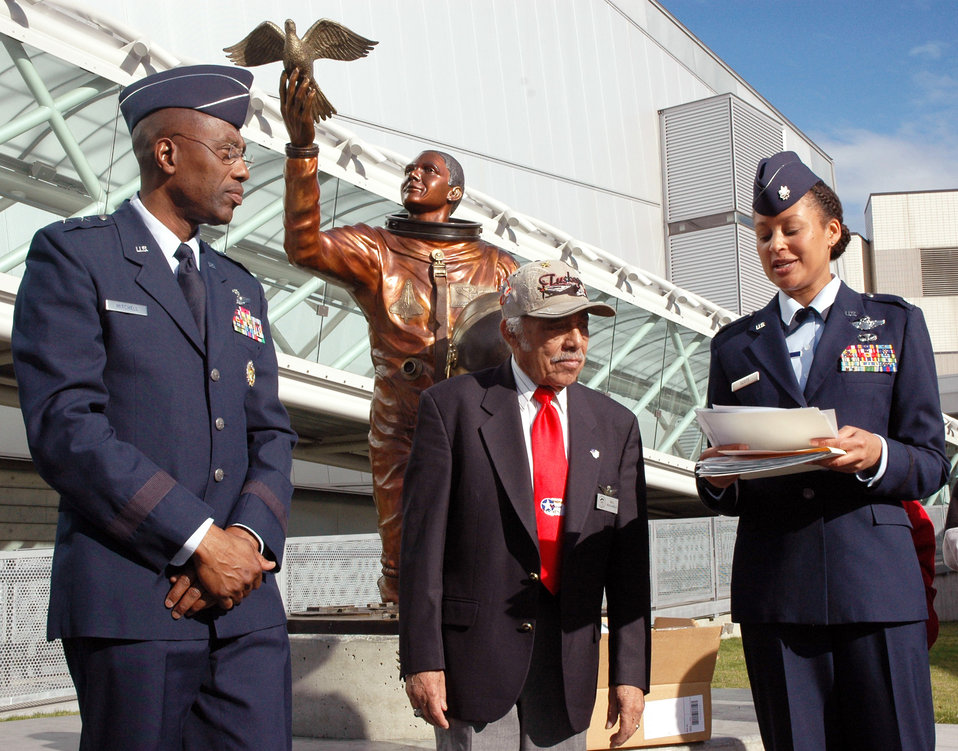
Tuskegee Airman dies

Maj. Gen. Harold L.